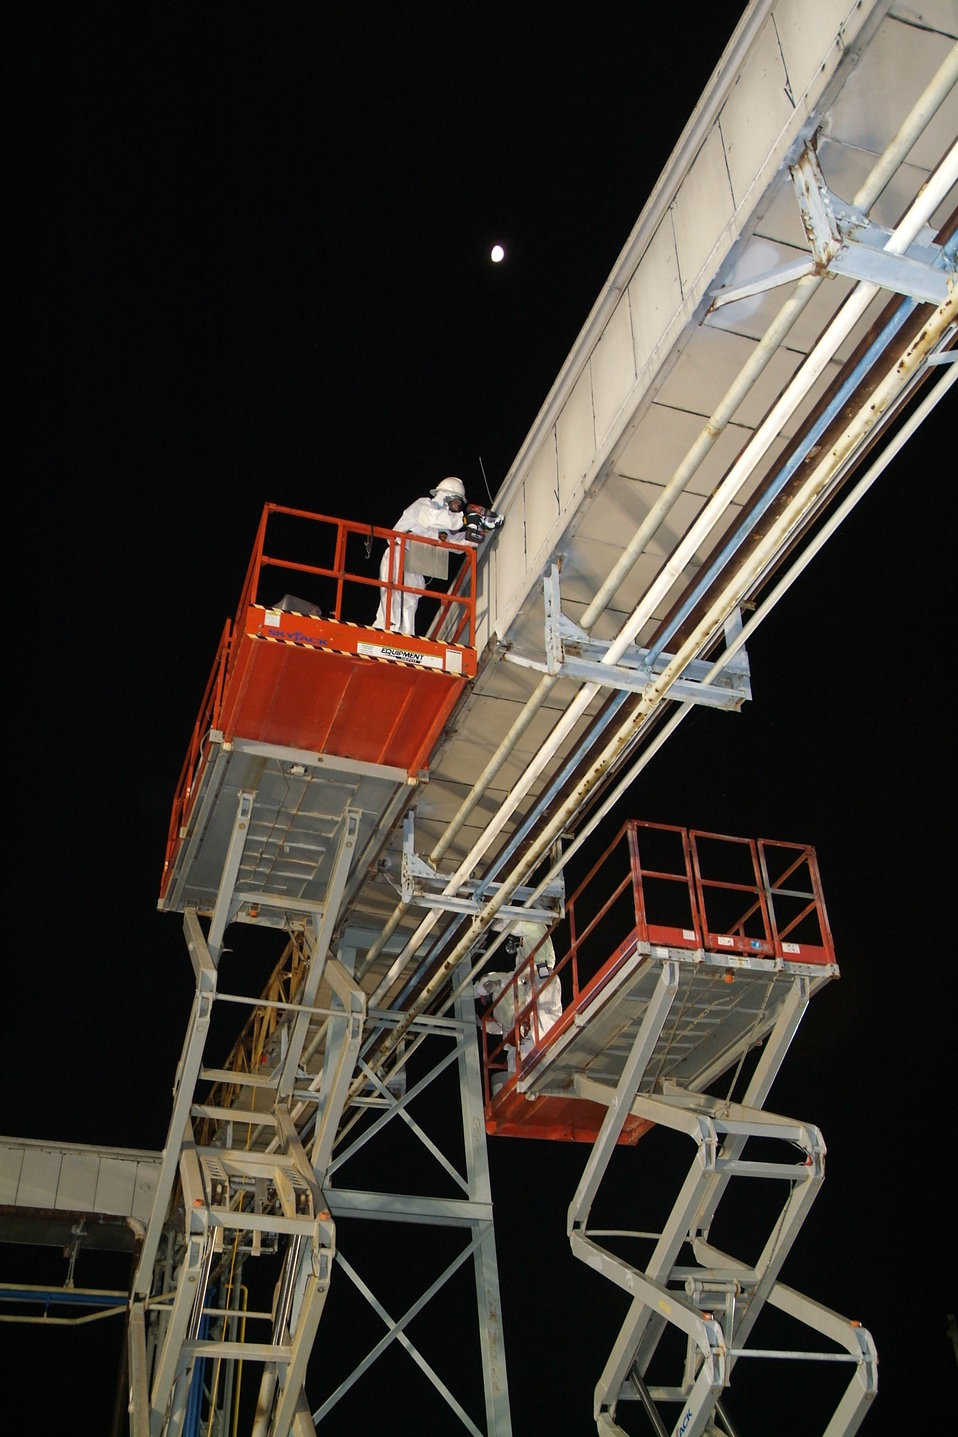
Paducah cleanup - uranium hexafluoride tie lines

A night crew in summer 2011 dismantles uranium hexafluoride tie lines linking the Feed Plant with other buildings at the Paducah Site. Added shifts helped accelerate cleanup.